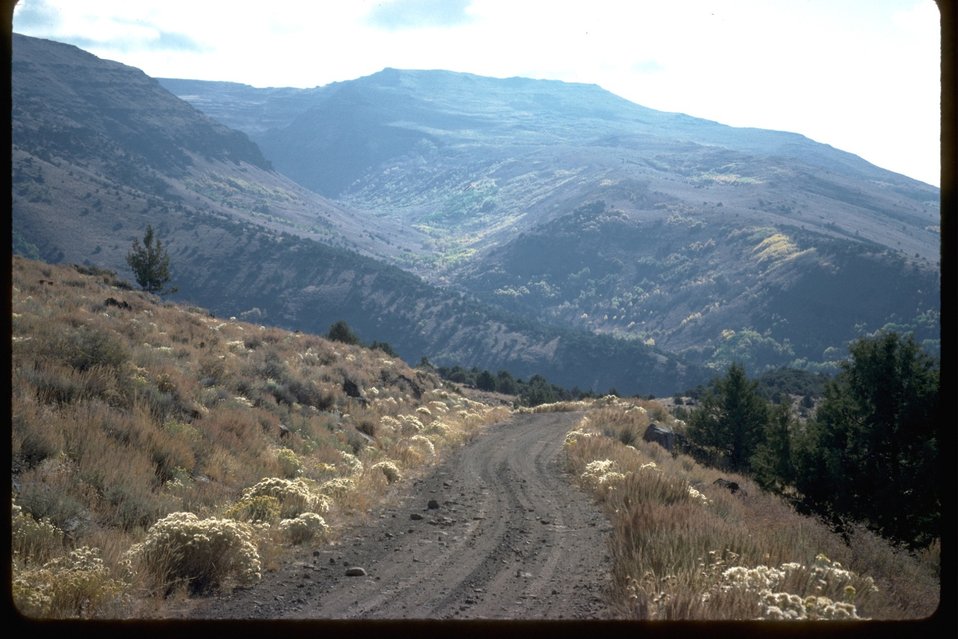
Steens Mountain National Back Country Byway in the Rooster Comb grade area of Little Indian Canyon.